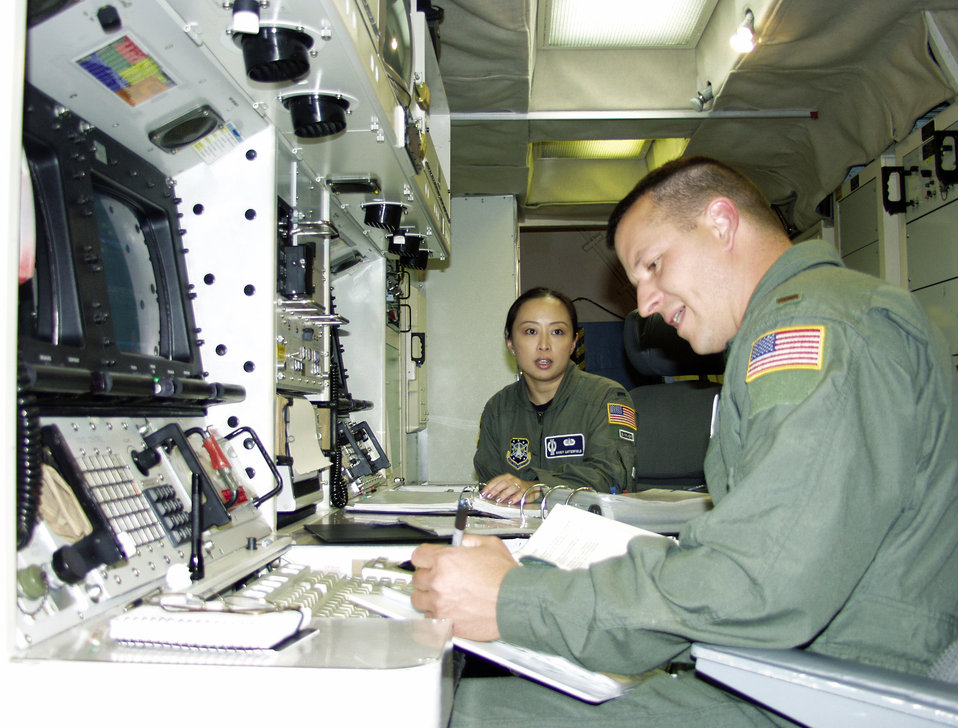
Alert team

GREAT PLAINS OF NORTH DAKOTA -- Sixty feet underground, 1st Lt. Nancy Satterfield and 2nd Lt. Eric Doctor refer to one of many manuals used for checking equipment at their control station here. The missileers spend 24 hours underground during a shift. They are assigned to the 742nd Missile Squadron at Minot Air Force Base, N.D.